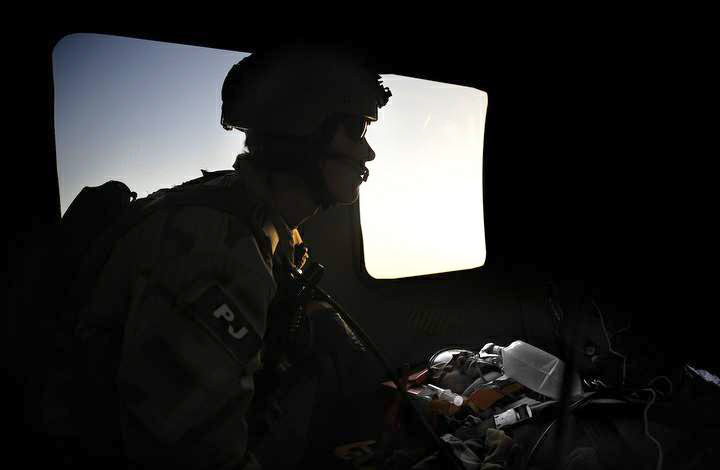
USAF rescue aids in 'Golden Hour' recovery of coalition forces.

Staff Sgt. William Lawson, a pararescueman with the 129th Expeditionary Rescue Squadron, cares for a wounded Afghan National Army soldier while aboard an HH-60G Pave Hawk helicopter above the Hemland Province, Afghanistan, June 27. Sergeant Lawson, a trained paramedic, provides care to the injured soldiers until they can be safely delivered to a hospital.